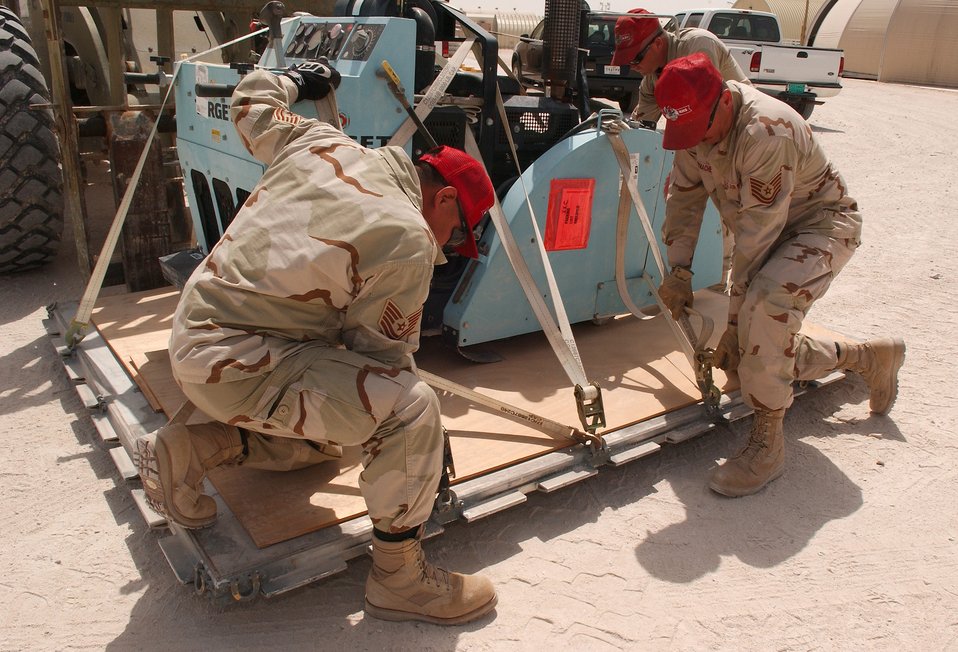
The perfect pallet

SOUTHWEST ASIA -- Tech Sgts. Leobardo Leija and John Wiser secure a heavy load onto a pallet destined to go aboard an aircraft headed downrange in support of Operation Iraqi Freedom. They are assigned to the 1st Expeditionary Red Horse Group at a forward-deployed location.